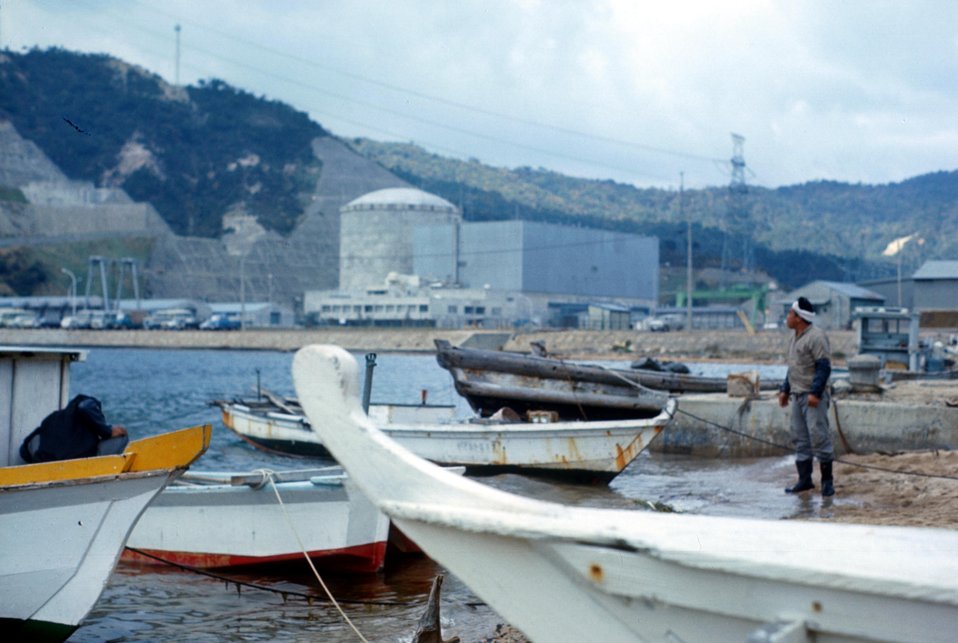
Japan - Tsuruga Plant - Japco Nuclear Reactor. c. 1970